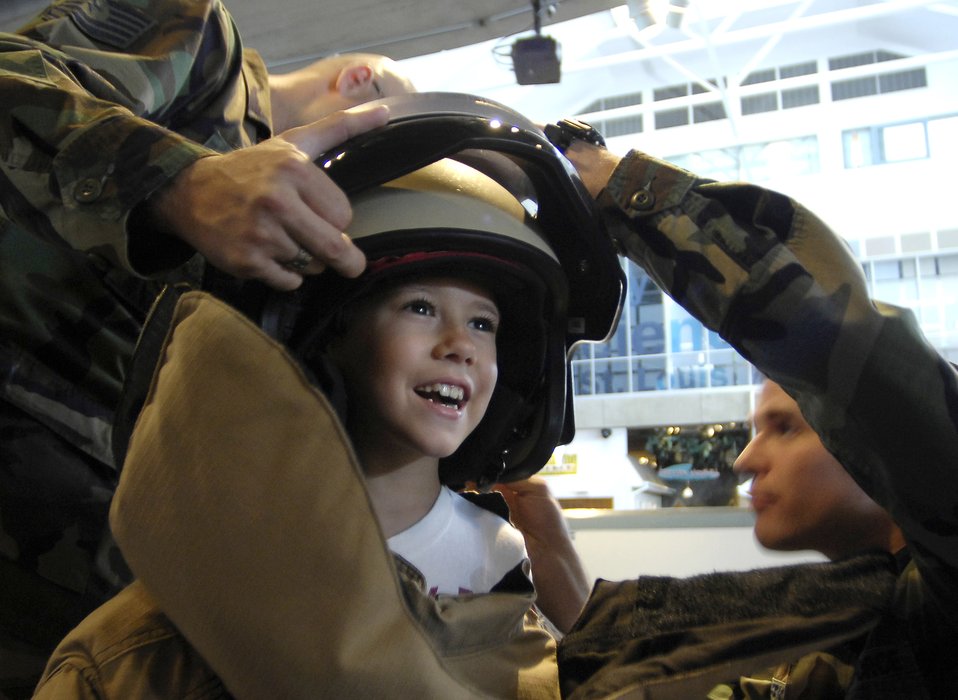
Learning about the Air Force

Tech. Sgt. Neil Jones (left) and Senior Airman David Gerig adjust the helmet of a bomb disposal suit for Joe Trout July 2 at the Saint Louis Science Center. The Airmen, assigned to the 375th Civil Engineering Squadron at Scott Air Force Base, Ill., were on hand for the kickoff of Air Force Week being celebrated in St. Louis.